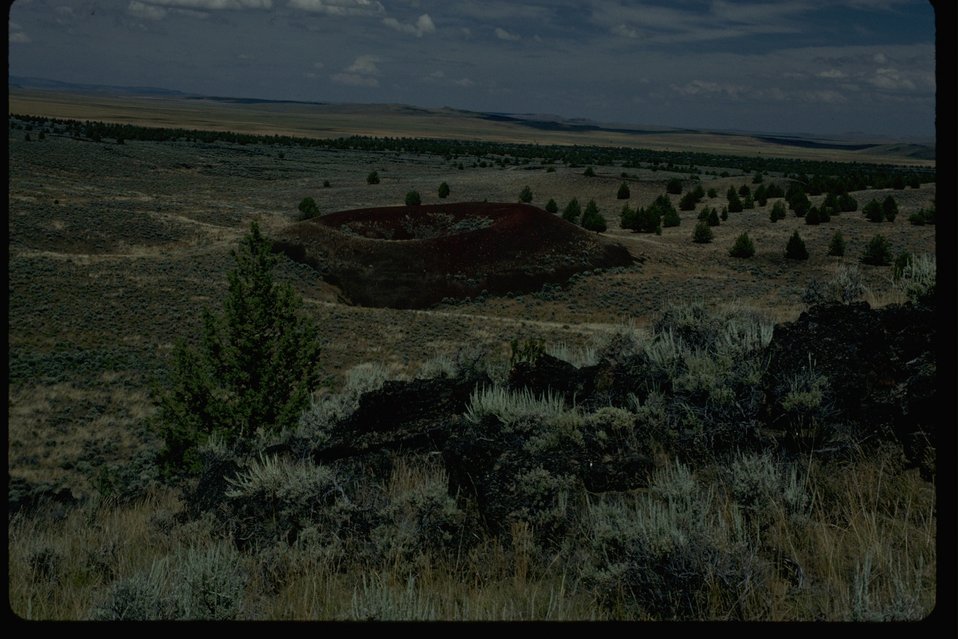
Little red cone in the Diamond Craters Outstanding Natural Area.